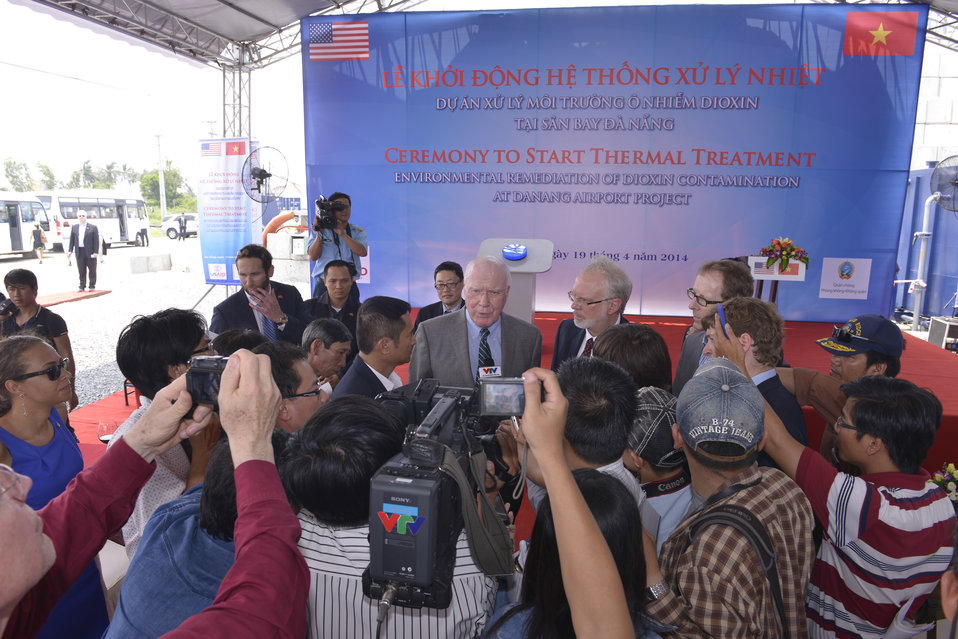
Senator Patrick Leahy speaks to local reporters at the ceremony to urn on the treatment system at Danang Airport

Danang, April 19, 2014.